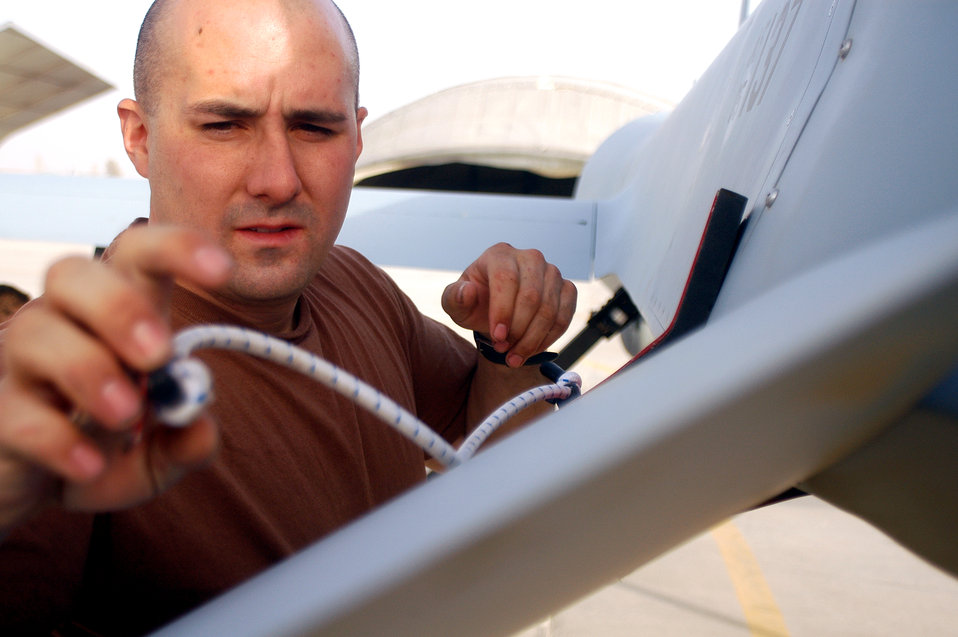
Predator provides eyes in the sky over Afghanistan

Staff Sgt. Steve Fraser attaches a brace to the tail of an MQ-1 Predator at Kandahar Airfield, Afghanistan, following a sortie in support of Operation Enduring Freedom on Friday, June 2, 2006. Sergeant Fraser is a crew chief deployed to the 62nd Expeditionary Reconnaissance Flight from Nellis Air Force Base, Nev.